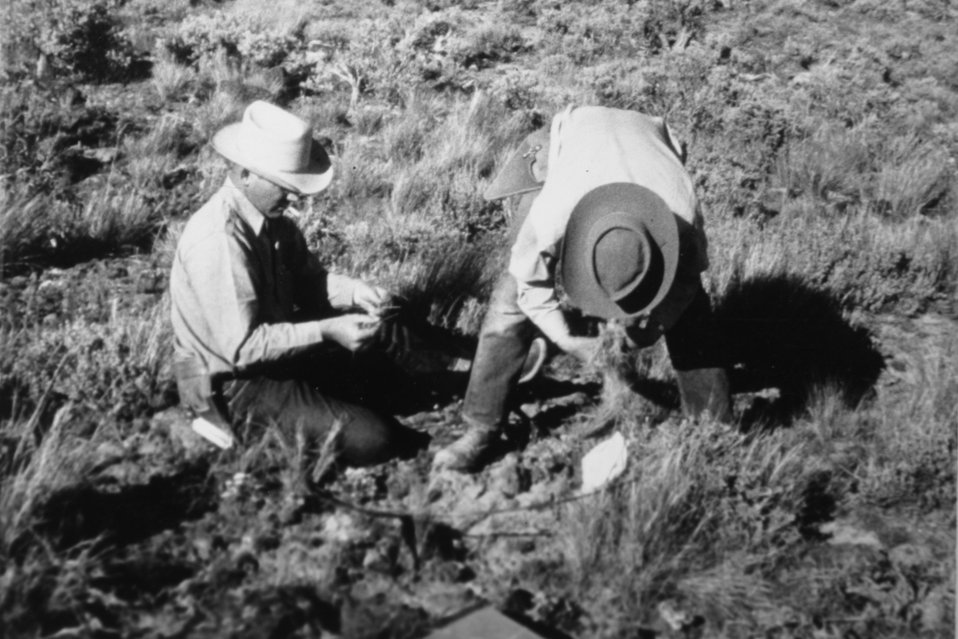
Conducting weight estiamte raghe survey on High Desert rangeland. circa 1950s